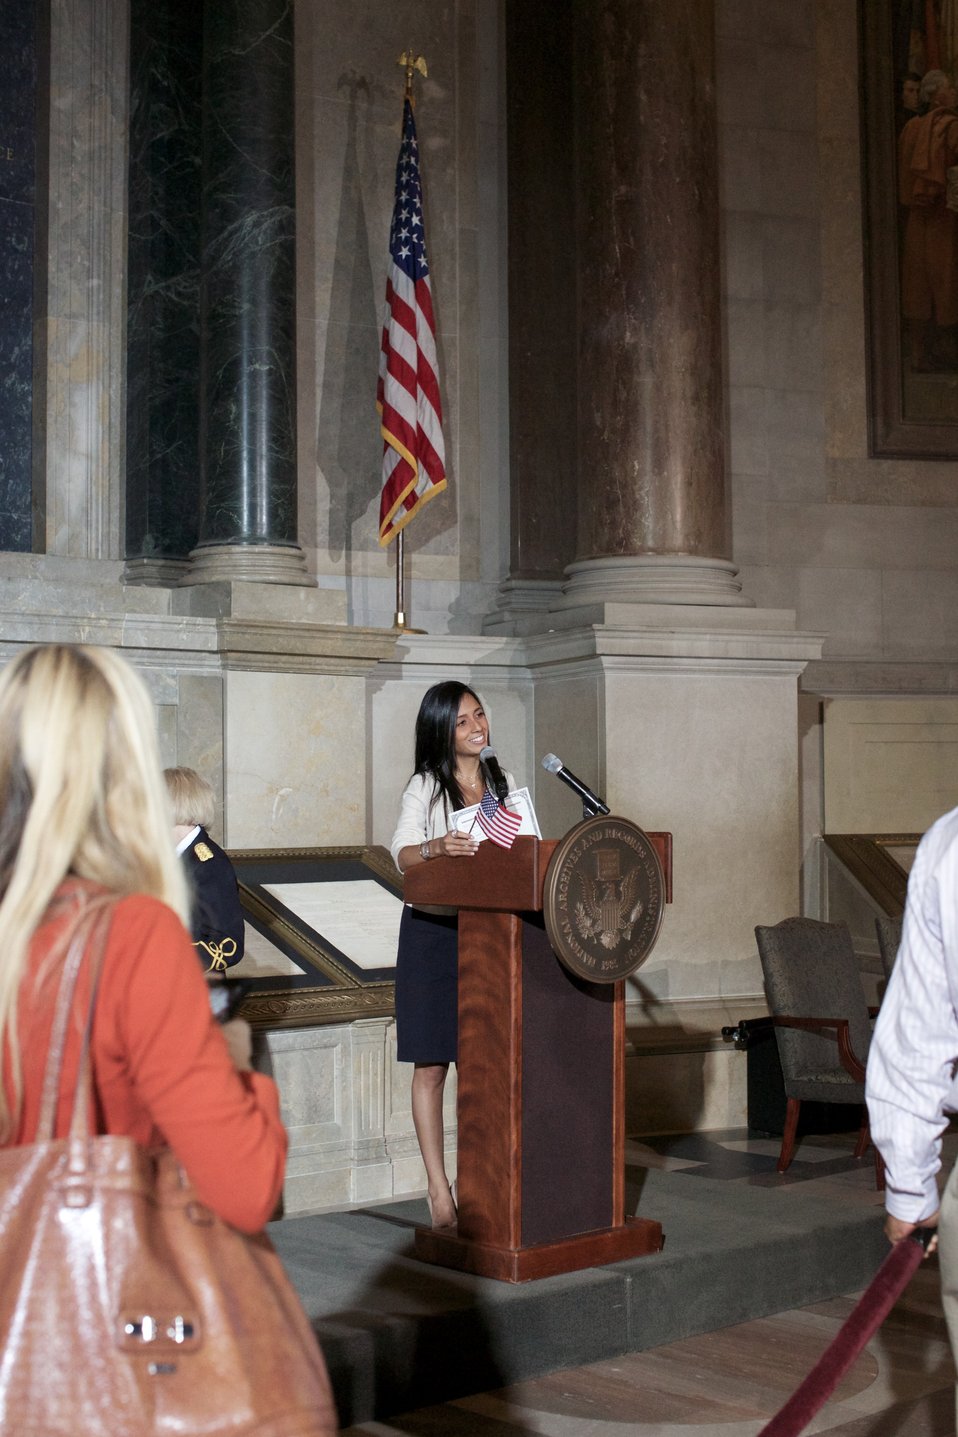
Naturalization Ceremony with Michelle Obama